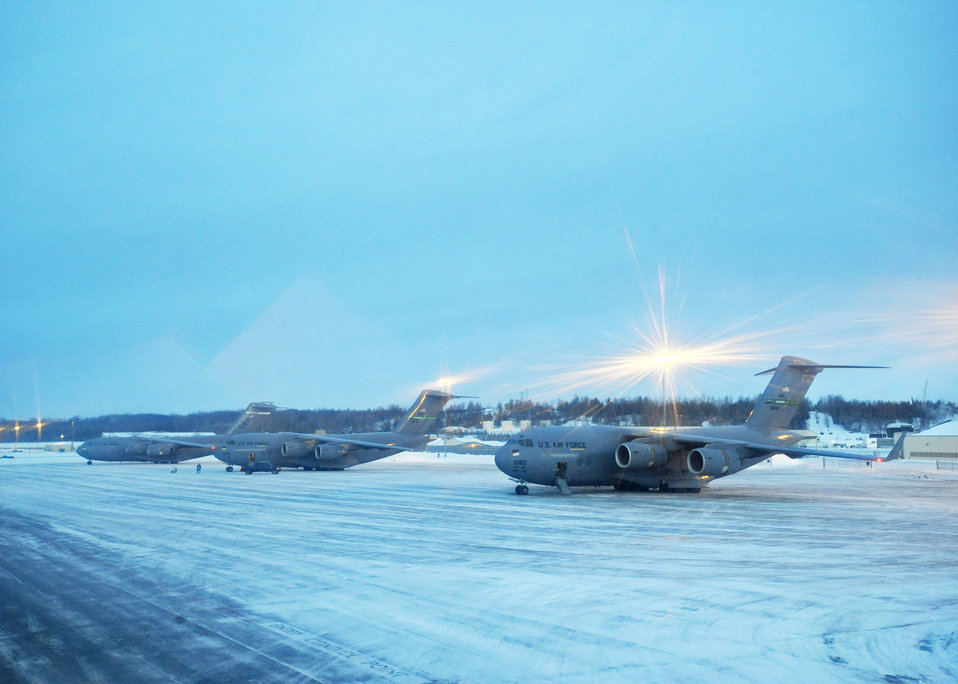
Serene Alaskan scene

C-17 Globemaster IIIs sit on the ramp at Elmendorf Air Force Base, Alaska, waiting to take off Feb. 10, 2010. The aircraft assigned to Pacific Air Forces and Air Mobility Command were participating in an exercise that involved exploring capabilities in large formations.